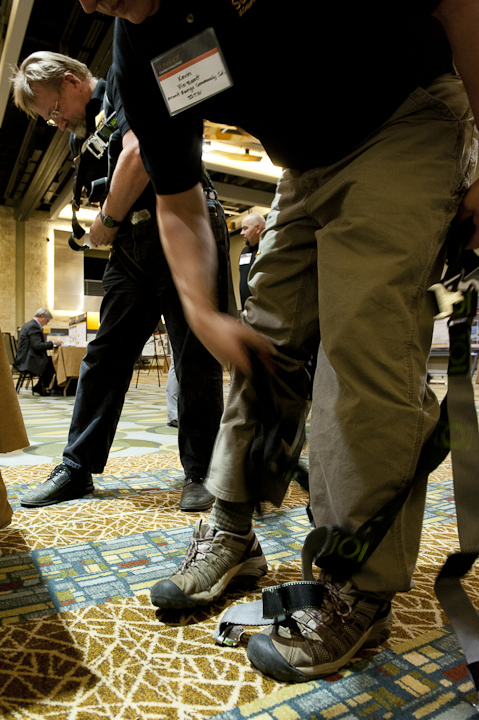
120613 SunShot

June 13, 2012- Students from Front Range Community College put on harnesses at an instruction exhibit at the Technology Forum at the SunShot Grand Challenge Summit and Technology Forum in Denver, Colorado.